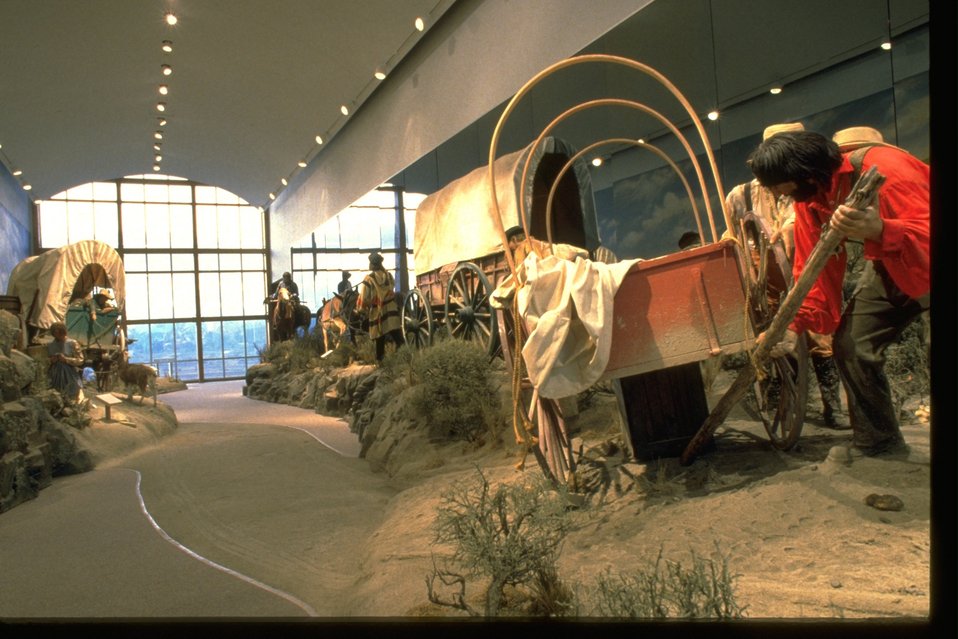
Living history exhibit of a pioneer wagon train.